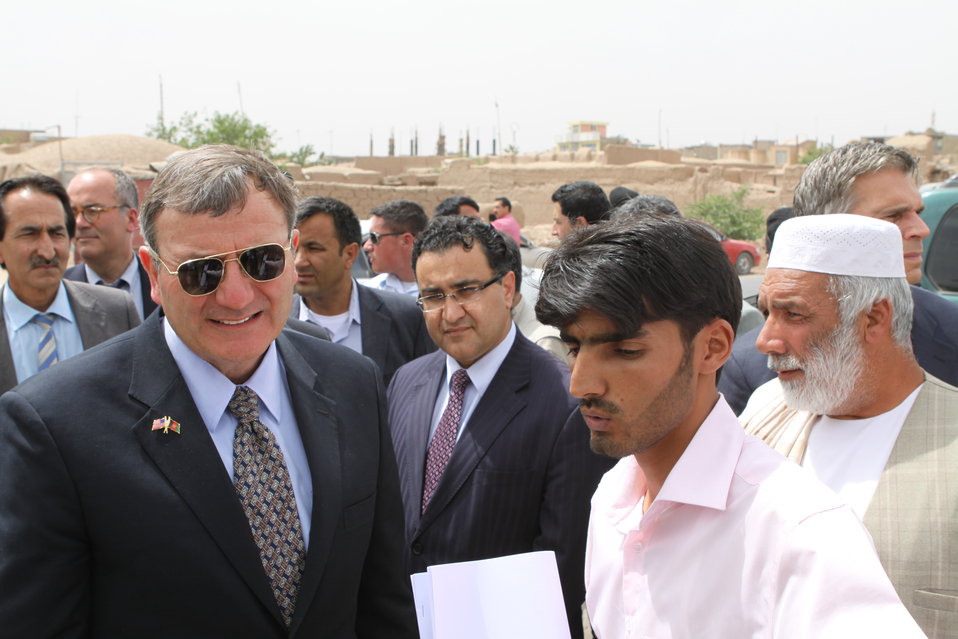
100525 Hirat Marble Conference 620